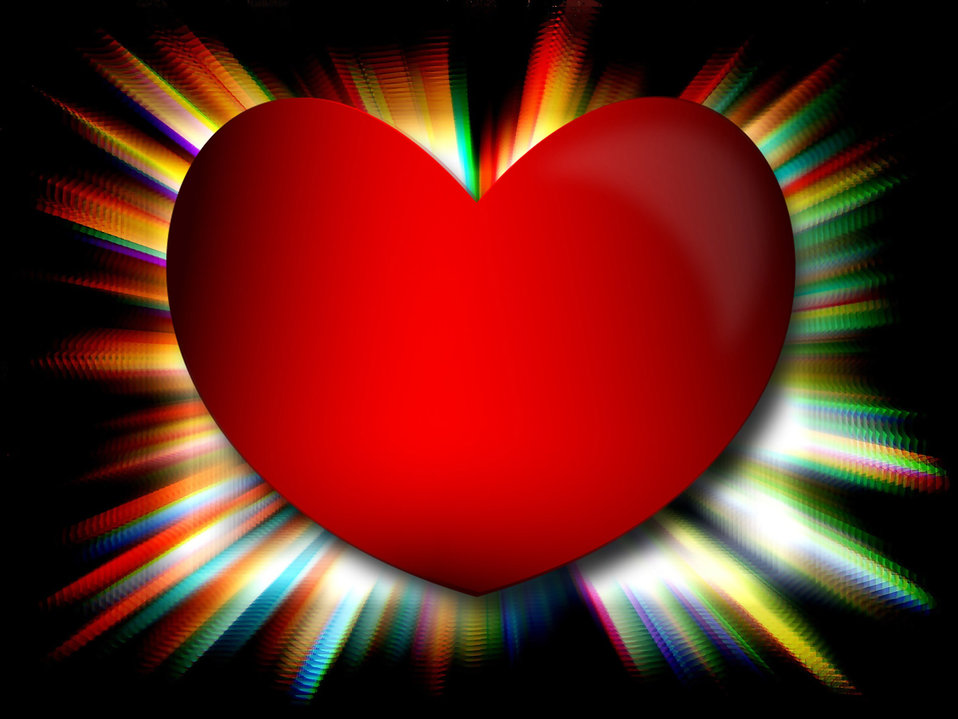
Power of love

Background.